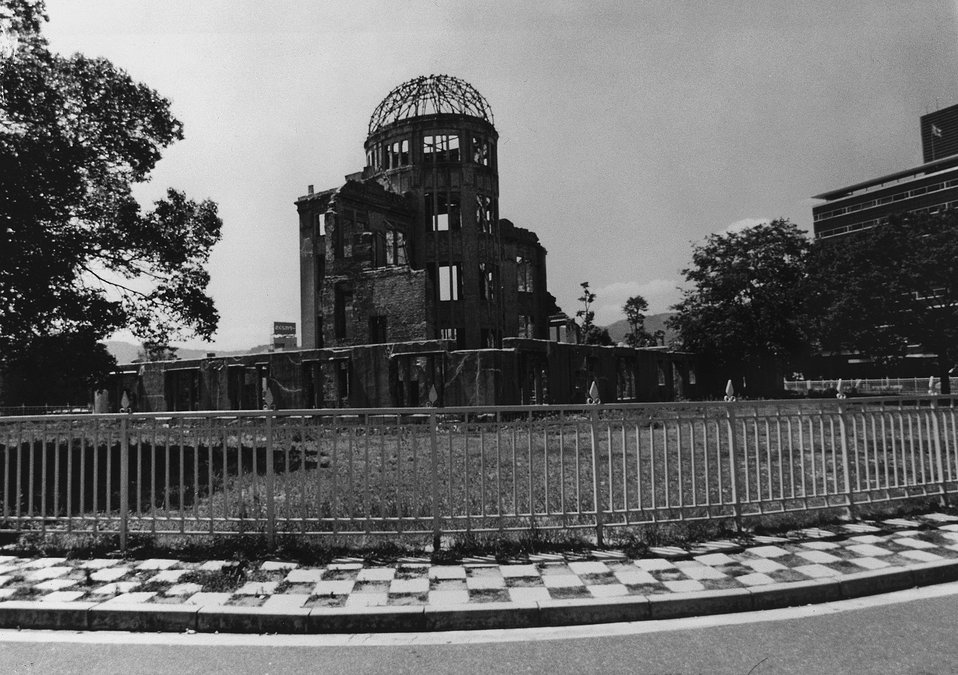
Hiroshima, Japan. The Peace Dome which is preserved as a reminder of what the atomic bomb can do.